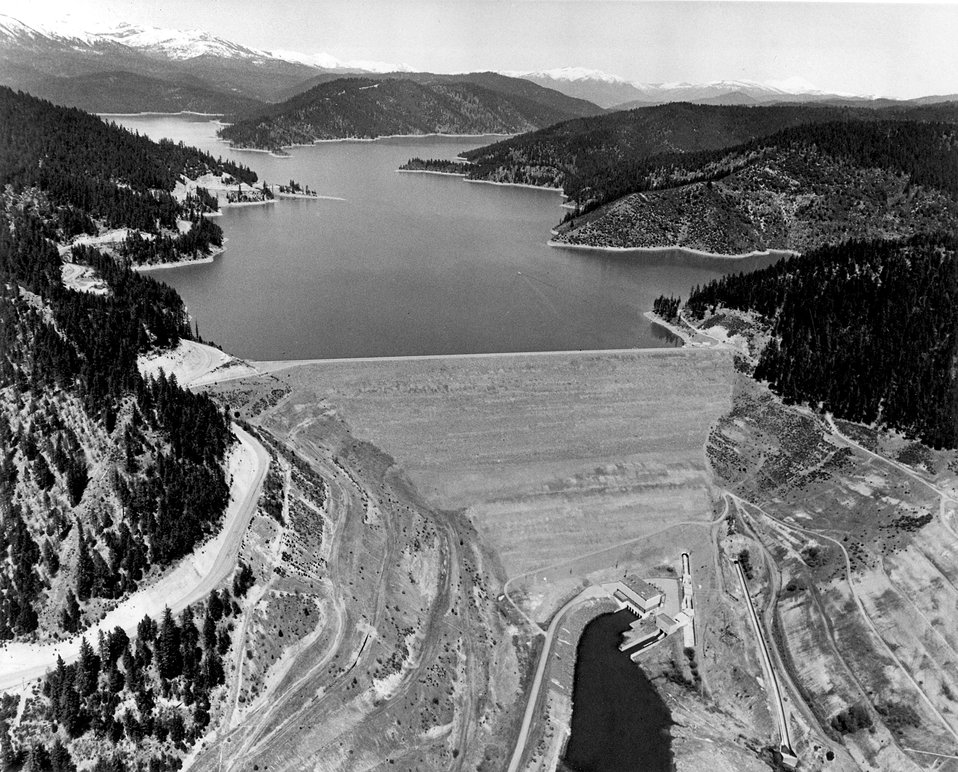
Aerial view looking upstream at Trinity Dam, Powerplant, and Clair Eagle Lake on the Trinity River near Lewiston, California. c. 1978